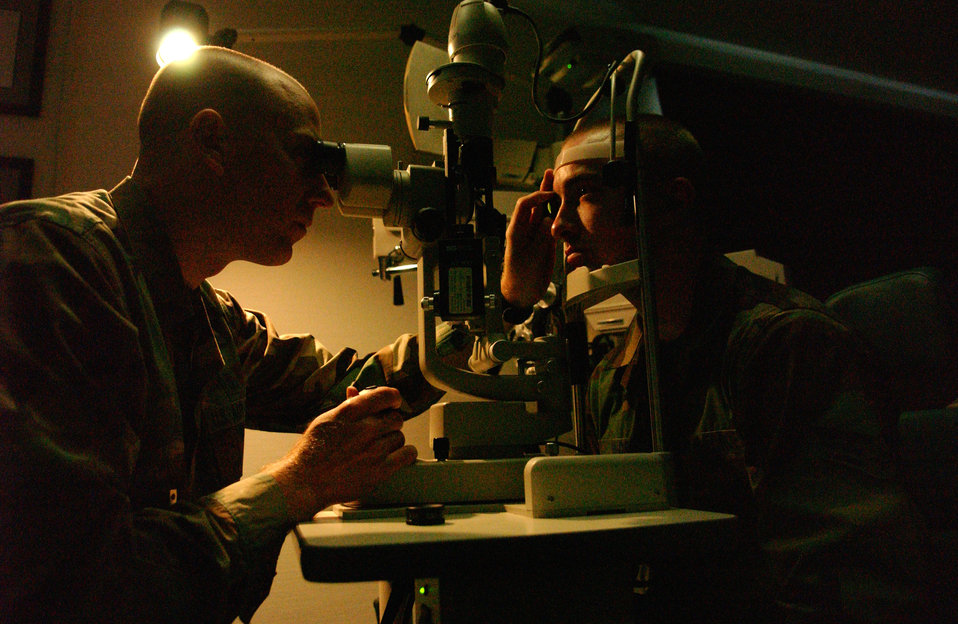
Eye check

Maj. Scott McKim examines Senior Airman Robert Minor's eyes. Major McKim is an optometrist with the 435th Aerospace Medicine Squadron at Ramstein Air Base, Germany. Airman Minor is assigned to the 435th Logistic Readiness Squadron.